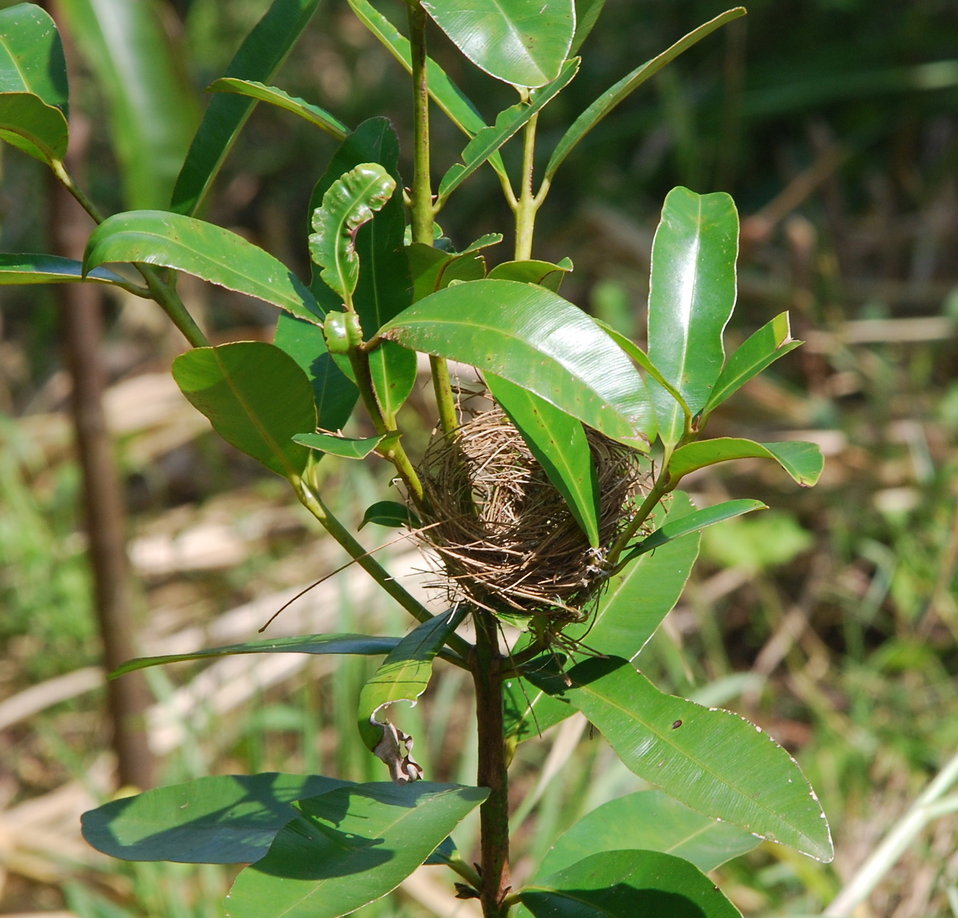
Calophyllum brasiliense DSC 0279B